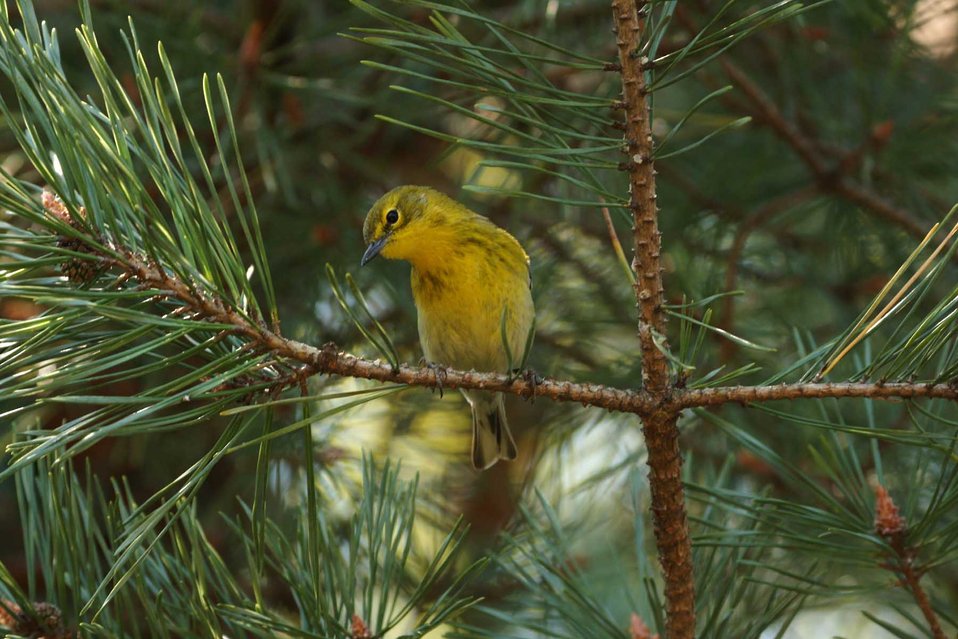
Pine warbler at John Heinz National Wildlife Refuge in Philadelphia, Pennsylvania.